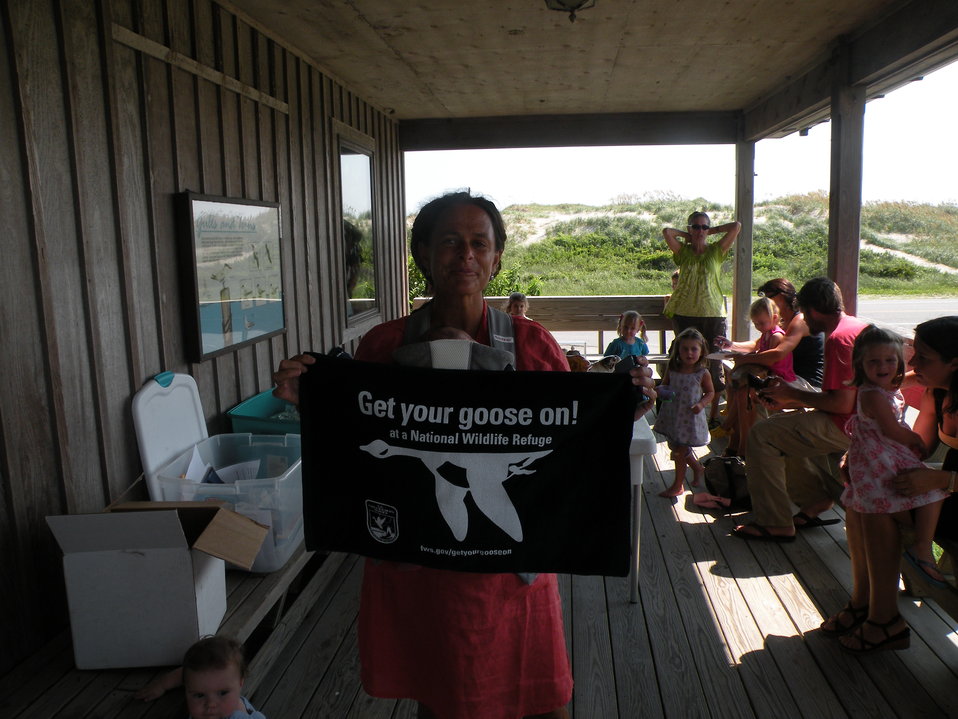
Get Your Goose On!

Outer Banks Mommy and Me group enjoy learning about turtles and Get there Goose on!

Cindy Heffley/USFWS